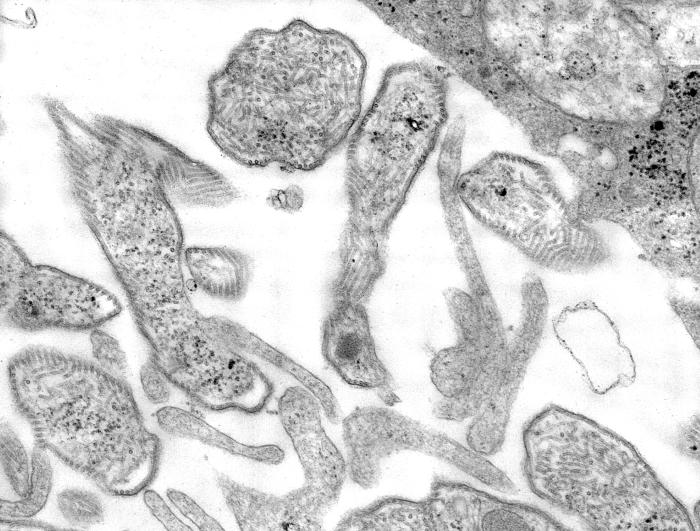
This 1977 thin sectioned transmission electron micrograph (TEM) depicted the ultrastructural details of the mumps virions that had been grown in a Vero cell culture.